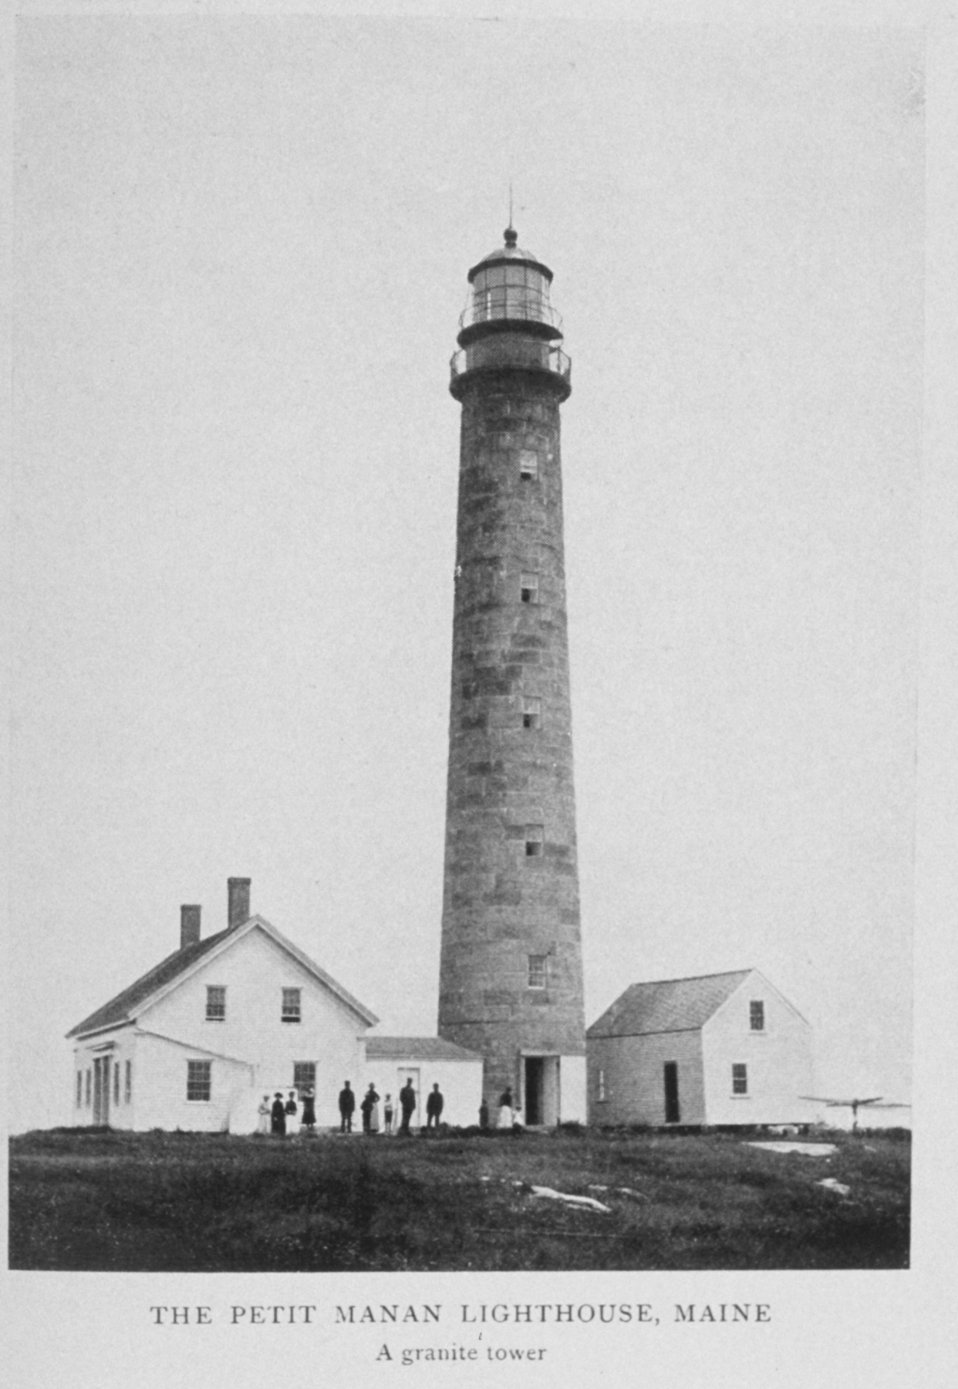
The Petit Manan Lighthouse, Maine: A granite tower. In: 'Lighthouses and Lightships of the United States' by George R. Putnam, p. 68, 1917. Houghton Mifflin and Company, Boston. Library Call No. 527.7 P98.